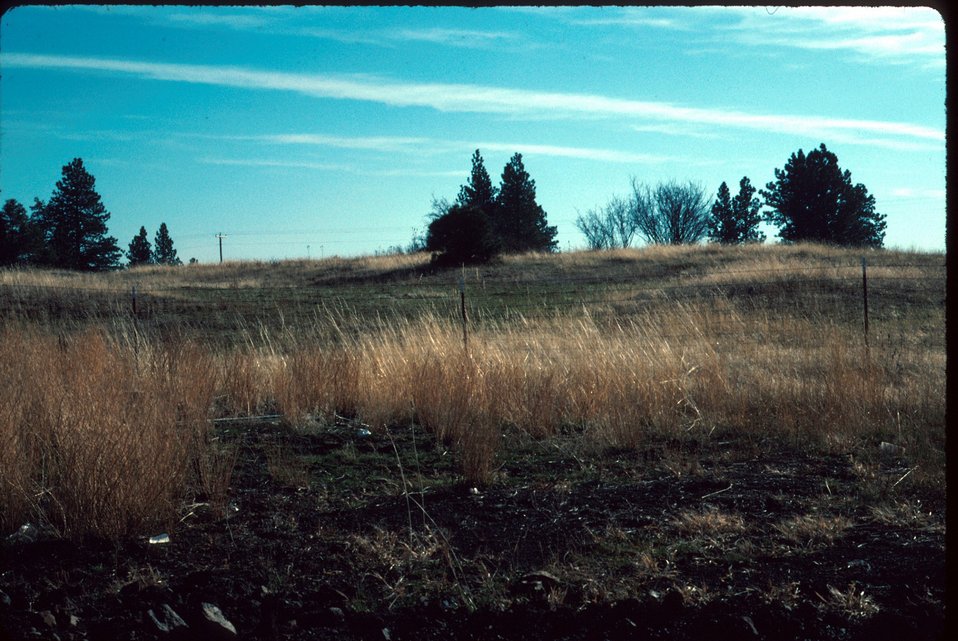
Tall Oat Grass grass